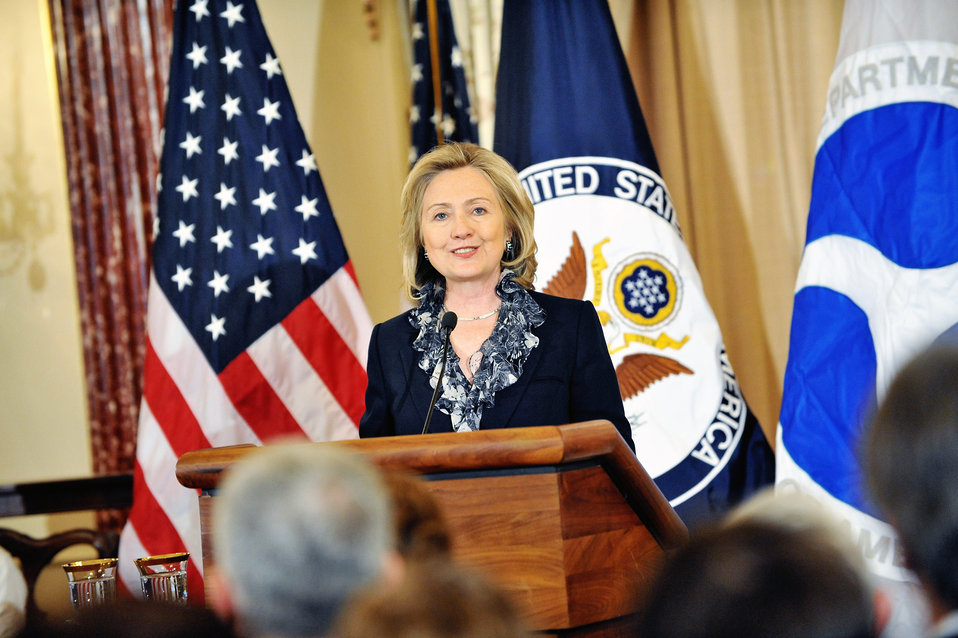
Secretary Clinton Delivers Remarks at Open Skies Ceremony

U.S. Secretary of State Hillary Rodham Clinton delivers remarks at a ceremony celebrating the negotiation of agreements between the United States and 100 Open Skies Partners, at the U.S. Department of State in Washington, D.C., on March 30, 2011.